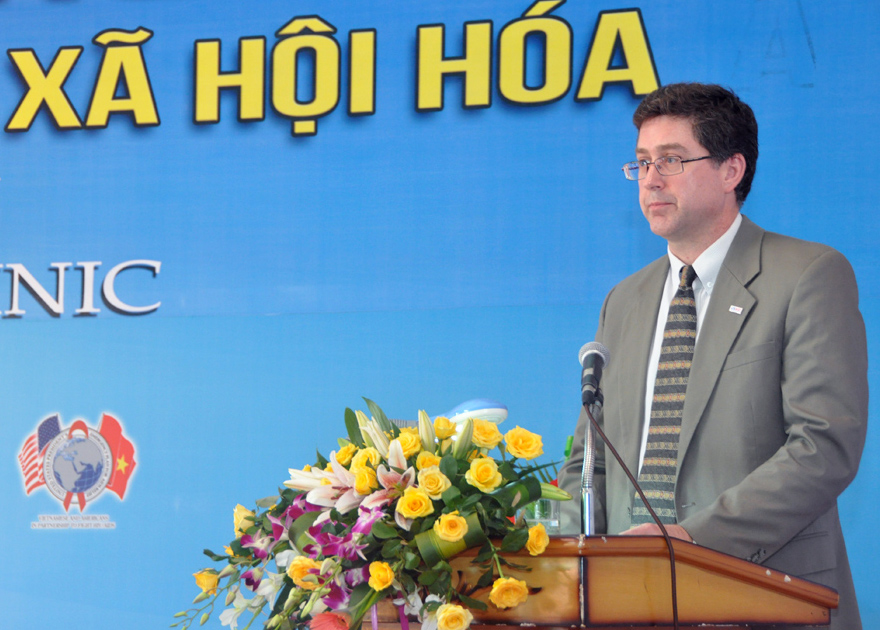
Co-pay Methadone Treatment Center Opens in Hai Phong on June 18, 2011

Jonathan Ross, director of USAID/Vietnam's Office of Public Health, delivers remarks.